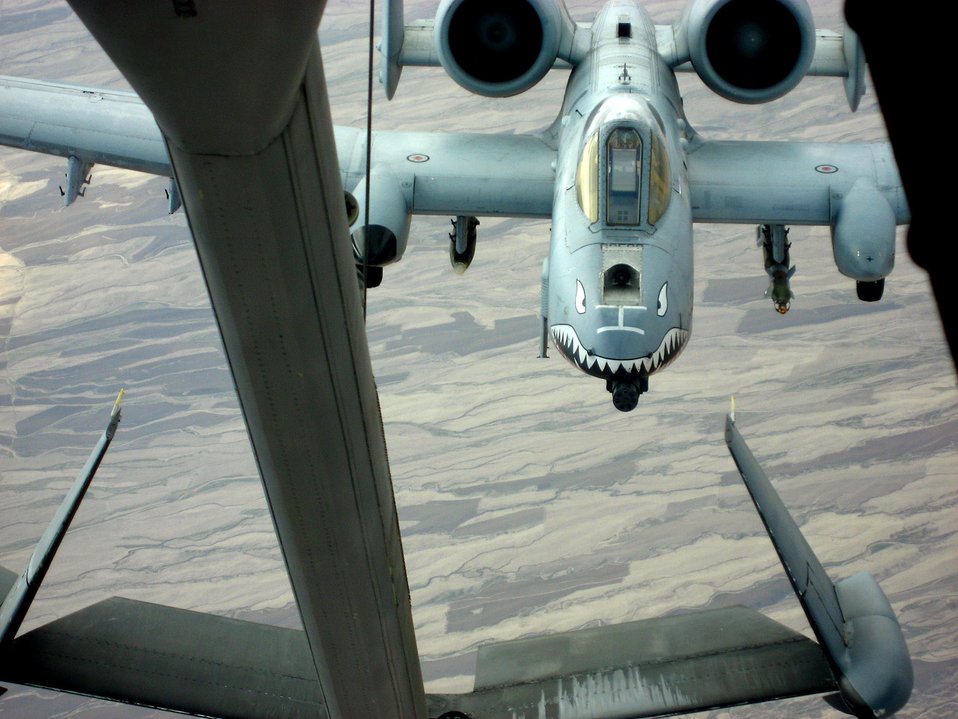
Gas and go

An A-10 Thunderbolt II needing fuel pulls up behind a KC-10 Extender flying over Afghanistan Dec. 14. The tanker is from the 380th Air Expeditionary Wing, home of the largest air refueling wing in Southwest Asia. Unit aircrews fly KC-10s and KC-135 Stratotankers in support of wartime operations.